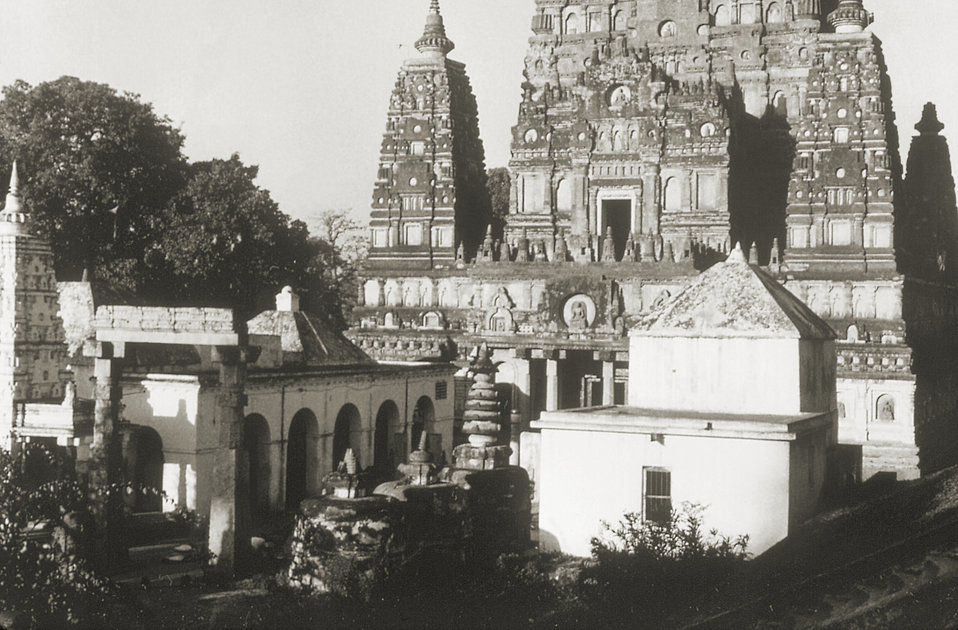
This 1975 image depicts the Mahabodhi Temple, which is the main Buddhist temple located at Bodh Gaya, or the holy pilgrimage site, in the Gaya district inside the Indian State of Bihar.